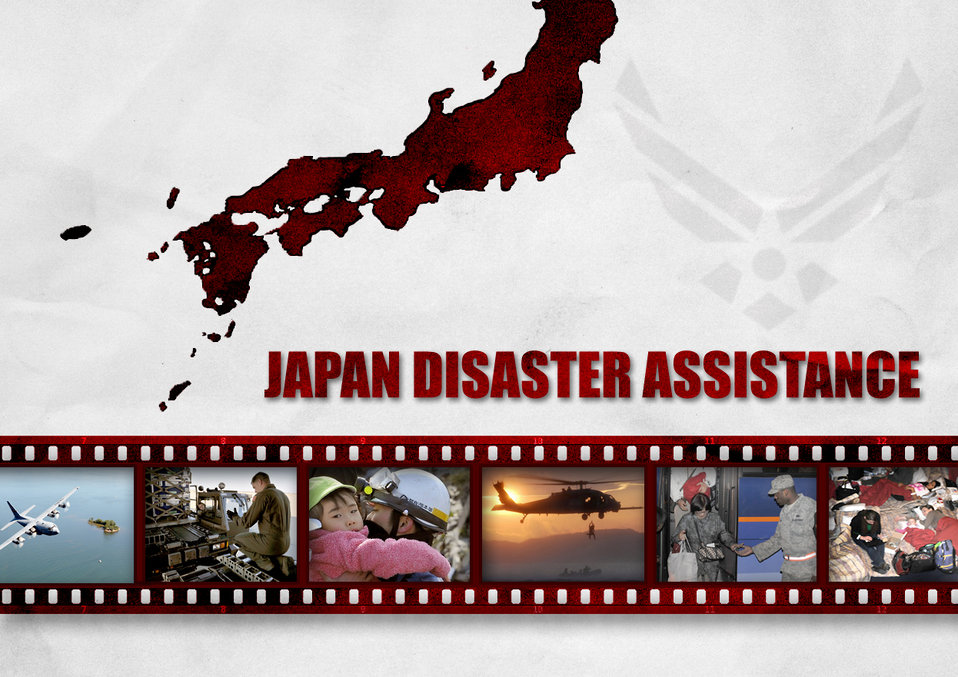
Japan Disaster Assistance